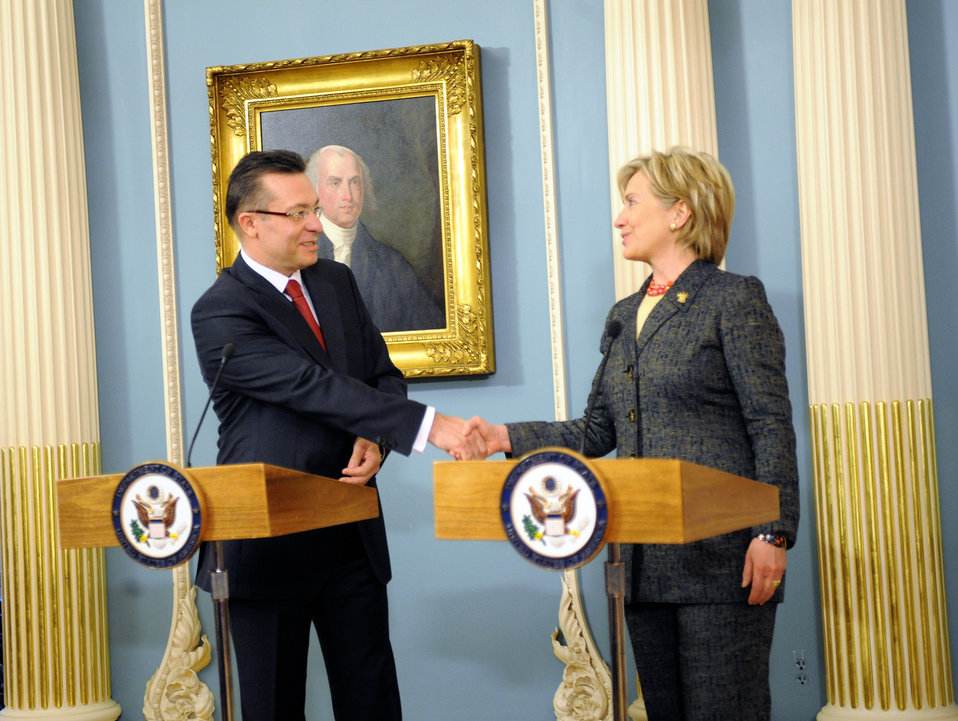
Secretary Clinton and Romanian Foreign Minister Sign Agreements

U.S. Secretary of State Hillary Rodham Clinton and Romanian Foreign Minister Cristian Diaconescu deliver remarks during a signing ceremony for the Protocols of Exchange of Instruments of Ratification for the U.S.-Romania Mutual Legal Assistance Protocol and the U.S.-Romania Extradition Treaty at the U.S. Department of State in Washington, DC May 8, 2009.